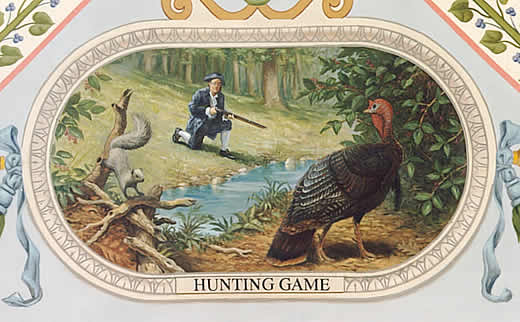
Hunting Game

EverGreene Painting Studios
Oil on Canvas
1993-1994
Cox Corridors

A single hunter with a long rifle stalks a squirrel and a turkey.